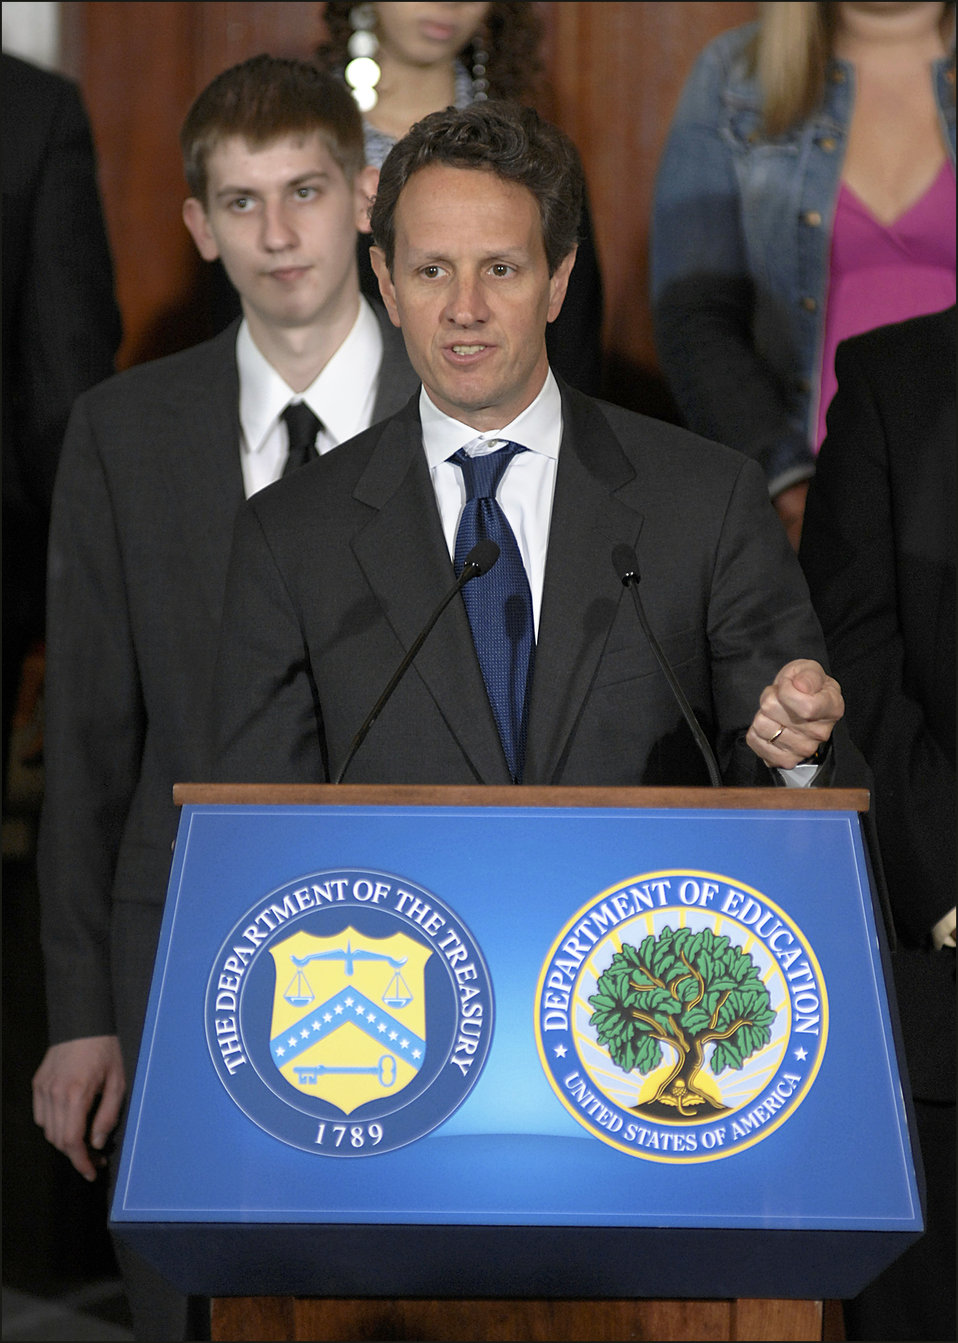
National Financial Compatibility Competition, 4/28/2010

Treasury Secretary Tim Geithner speaking at an event recognizing high scoring students in the National Financial Capability Challenge.